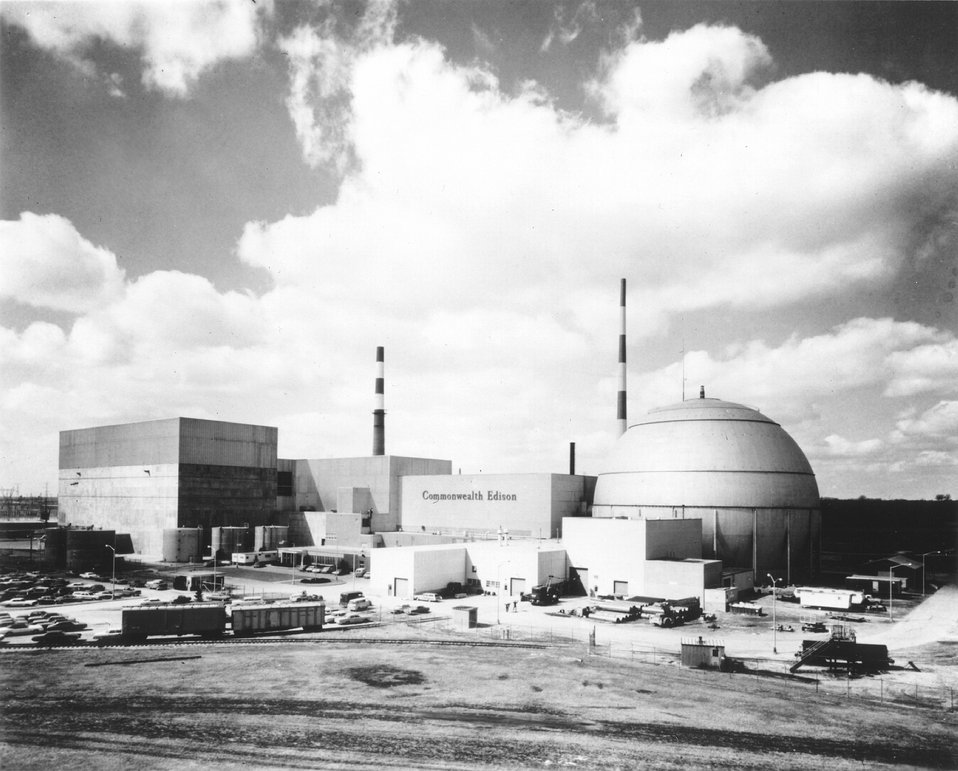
An exterior view of Commonwealth Edison Company's Dresden nuclear power station near Morris, Illinois. Circa 1971.